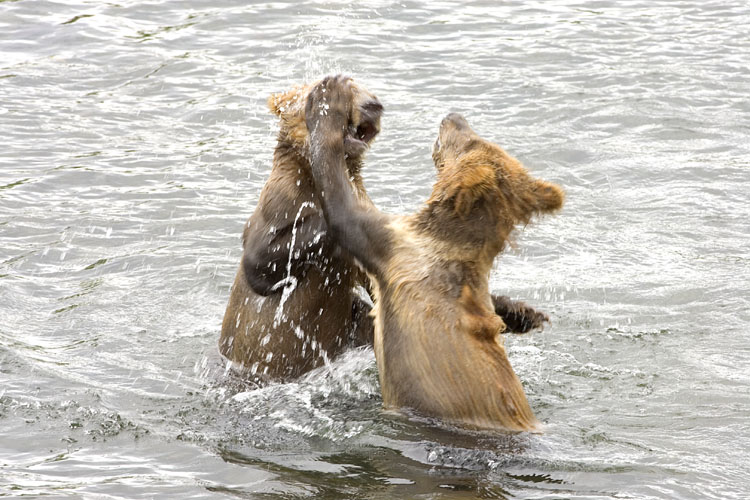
Wildlife of Kodiak Refuge

Playful Kodiak Bears